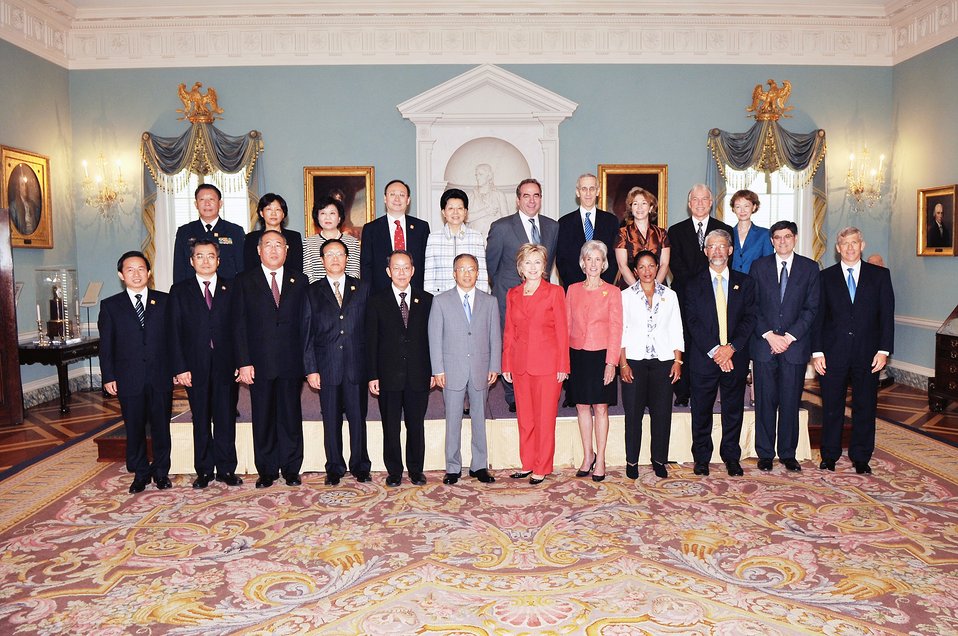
U.S.-China Strategic and Economic Dialogue

U.S. Secretary of State Hillary Rodham Clinton and other participants in the U.S.-China Strategic and Economic Dialogue at the U.S. Department of State July 28, 2009.